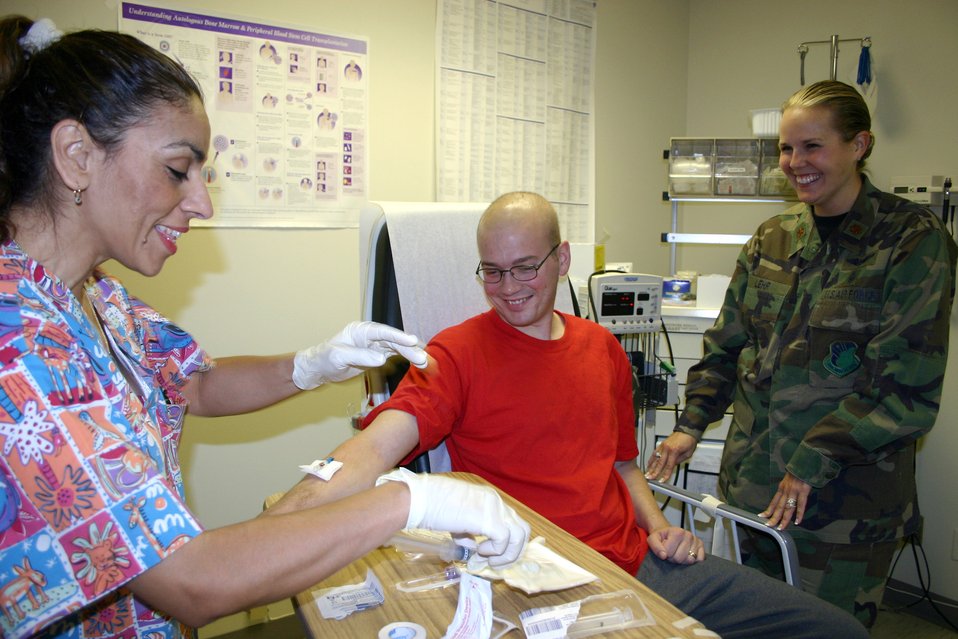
From Iraq to Wilford Hall, nurse, patient meet again

Cris Mayes (left) and Maj. Rebecca Lehr manage to get Army Sgt. Joe DeLashmutt to laugh, despite the pain caused while placing a new intravenous line in his arm. Major Lehr has been following Sergeant DeLashmutt's care since helping break the news to him in Iraq that he has leukemia. Ms. Mayes is a bone marrow transplant nurse and Major Lehr is the allied health flight commander at Wilford Hall Medical Center in San Antonio.